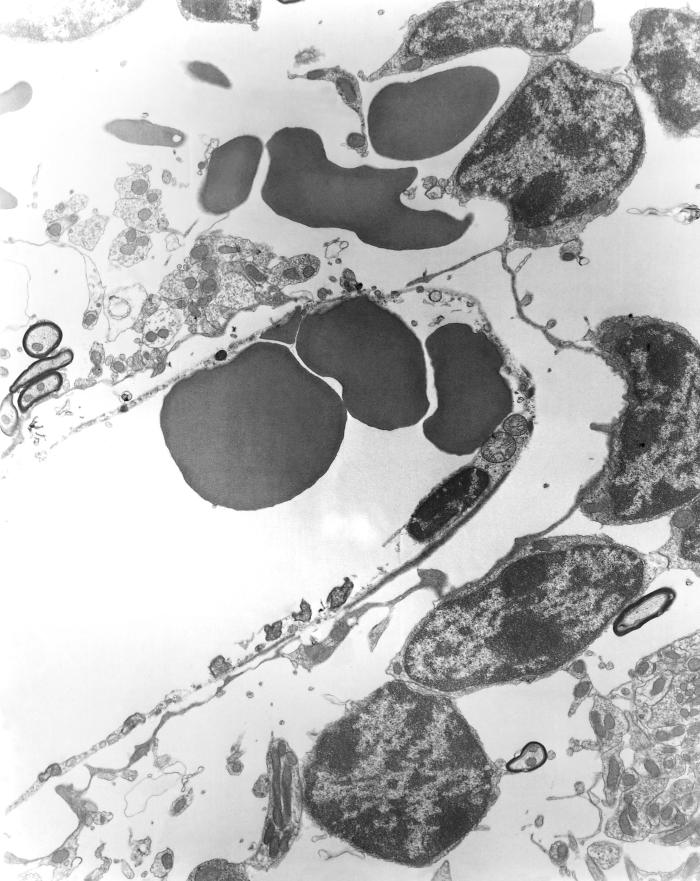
This 1978 transmission electron micrograph (TEM) depicted a brain capillary of a mouse that had been experimentally infected intravenously with Orientia tsutsugamushi rickettsial micro-organisms. Revealed by this TEM, was the presence of pericapillary hemorrhage and edema. Several of the O. tsutsugamushi organisms were visible within the cytoplasm of a degenerating capillary endothelial cell.